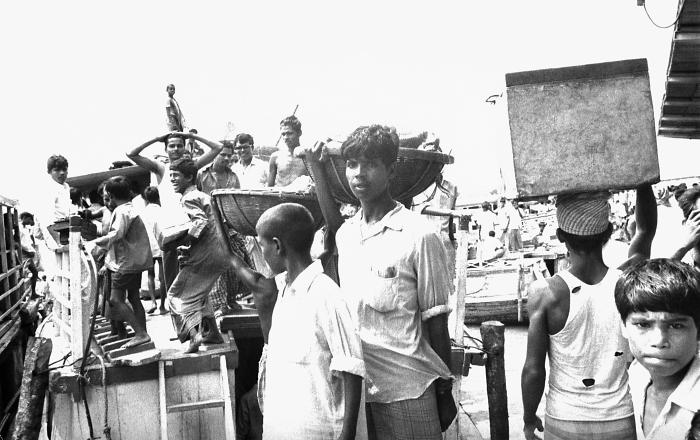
These Bangladesh townspeople were in the process of loading various goods unto a large boat, which would transport these items to other riverine communities. This photograph provided by Dr. Stan Foster, and captured by Pierre Claquin, M.D., B.A.C., who at the time was a member of the World Health Organization's Smallpox Eradication Program. It was part of a series photographed by former E.I.S. officer, Stanley O. Foster M.D., M.P.H., and was one of a series entitled 'The Story of One Smallpox Jeep', which depicted the travails faced by the jeep, and its occupants of public health practitioners, as they road through the Bangladesh countryside in an attempt to eradicate smallpox from the country.